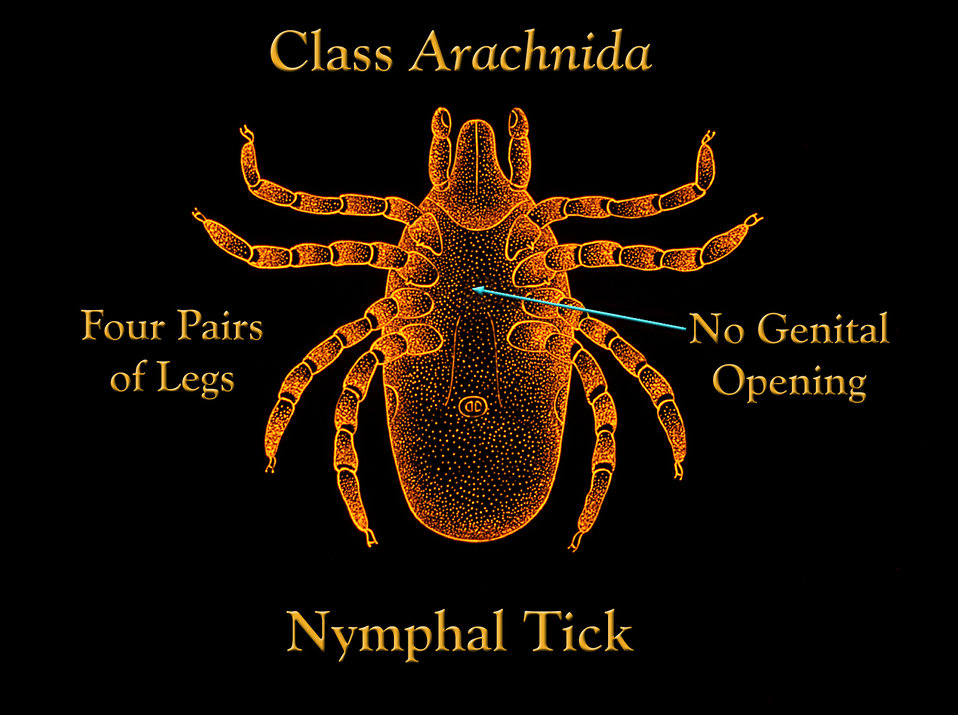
This illustration depicts the features of a nymph-staged, or immature tick, which at this stage possess four pairs of legs.